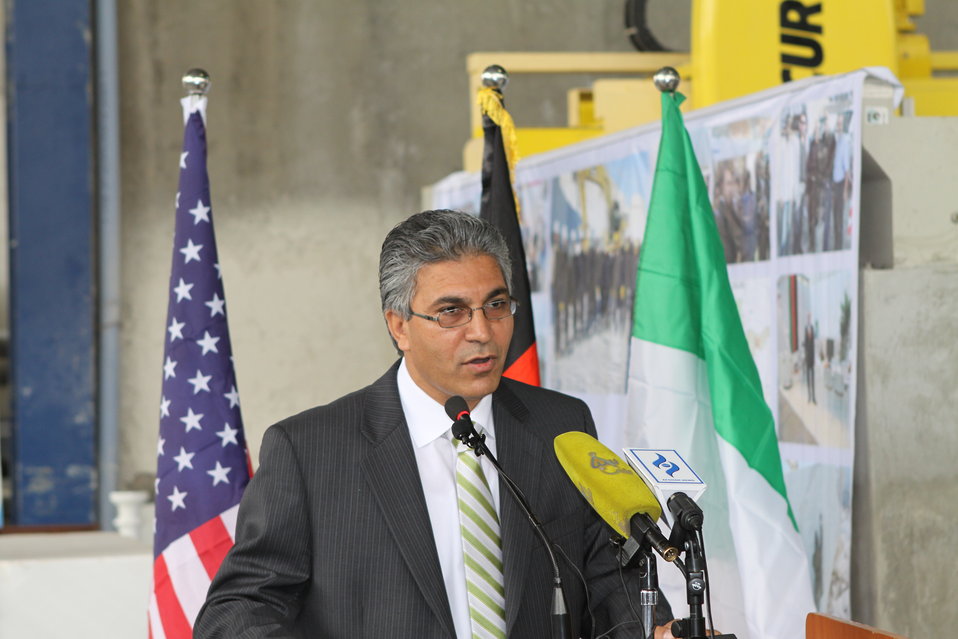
100525 Hirat Marble Conference 148